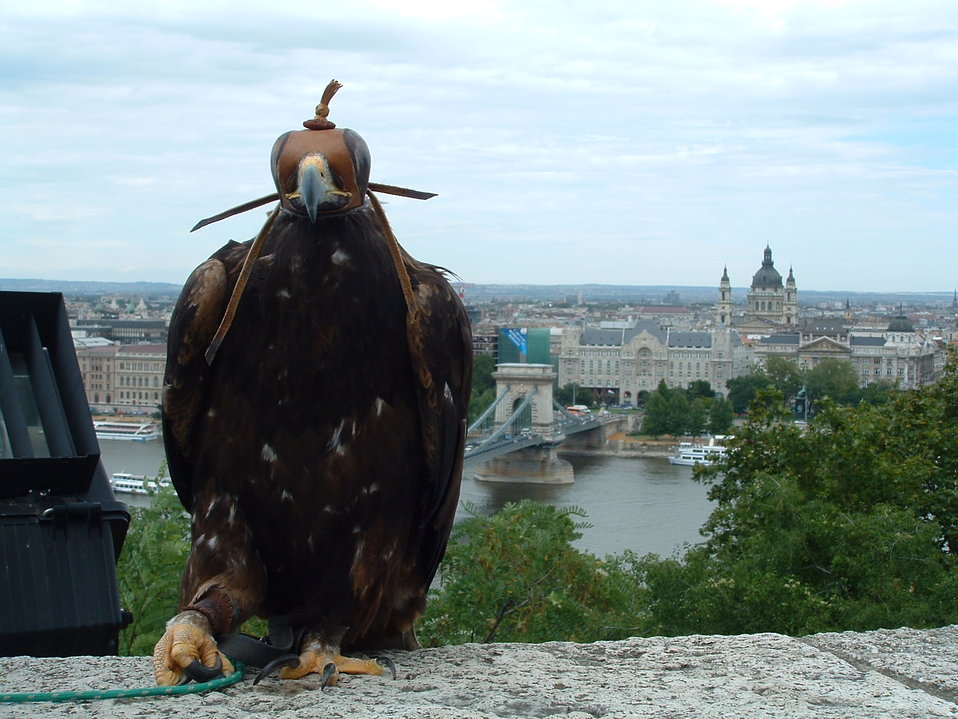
I took this sad photo two years ago when I visited Budapest, Hungary.